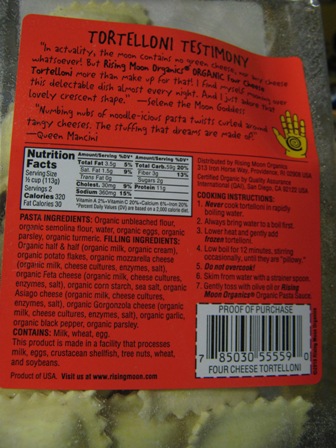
RECALLED - Ravioli

December 14, 2011 - Product Recall - Rising Moon Organics Announces a Voluntary Recall of One Code Date of Mislabeled Mediterranean Garlic & Herb Ravioli Due to Undeclared Soy Allergen.